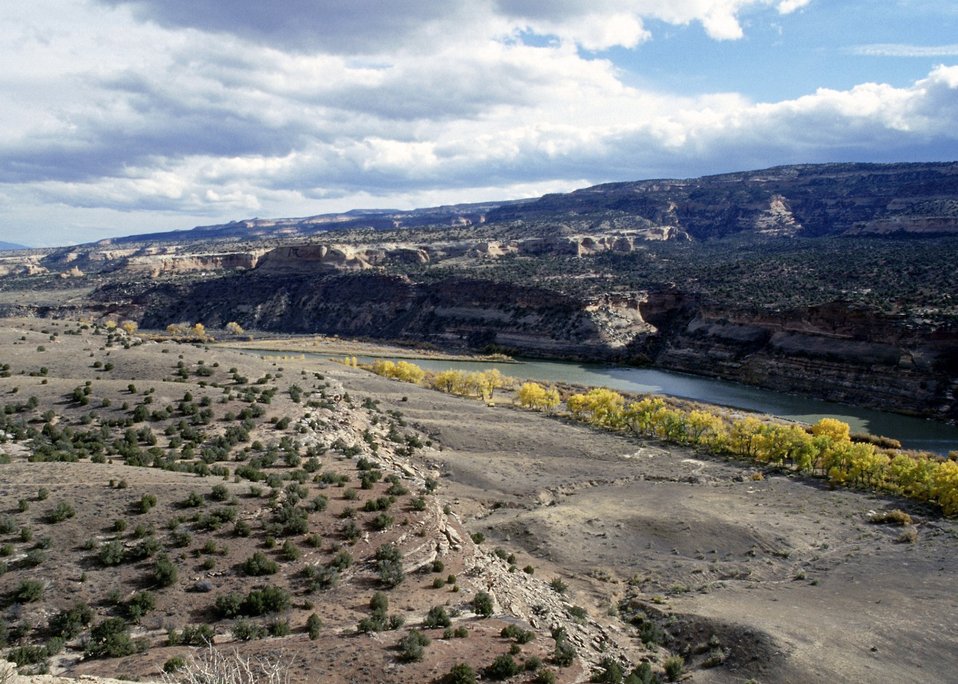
Loma Boat Ramp